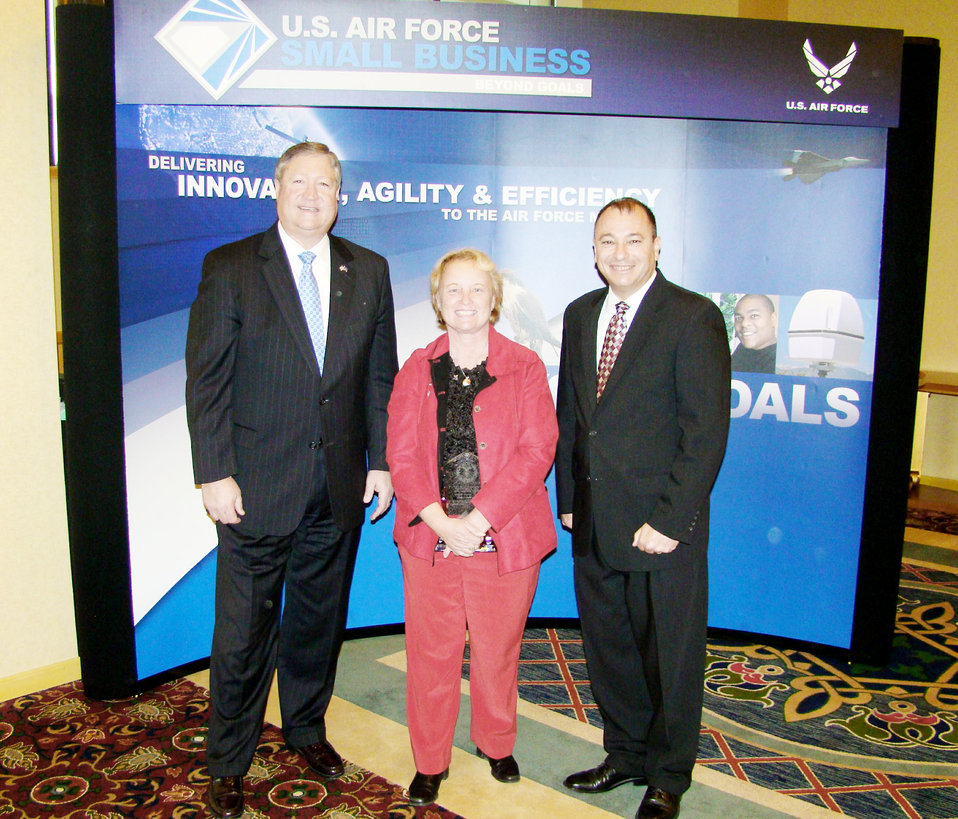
Air Force secretary presents small business achievement awards

Secretary of the Air Force Michael B. Donley (left) and Ronald A. Poussard stand with Diane Perry, recipient of the 2008 Air Force Small Business Champion Award, after the awards ceremony Nov. 17, 2009, in Arlington, Va. Ms. Perry received the award for her accomplishments as the small business specialist for Vandenberg Air Force Base, Calif. Mr. Poussard is the Air Force Office of Small Business Programs director.